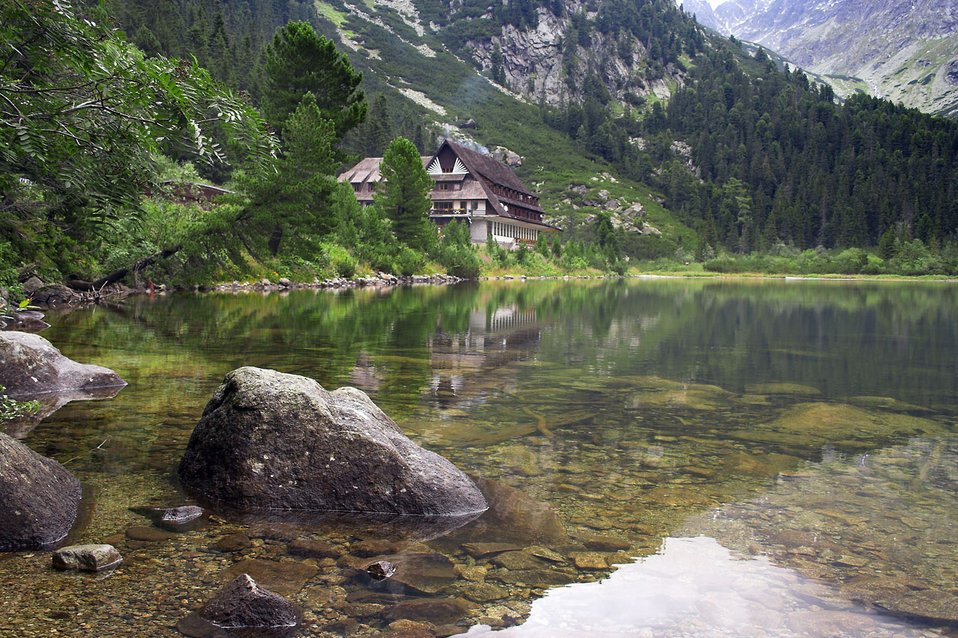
Chalet next to tarn

Chalet on bank of poprad tarn. this photo is a cd gallery winner in digital photo magazine - issue no. 76.